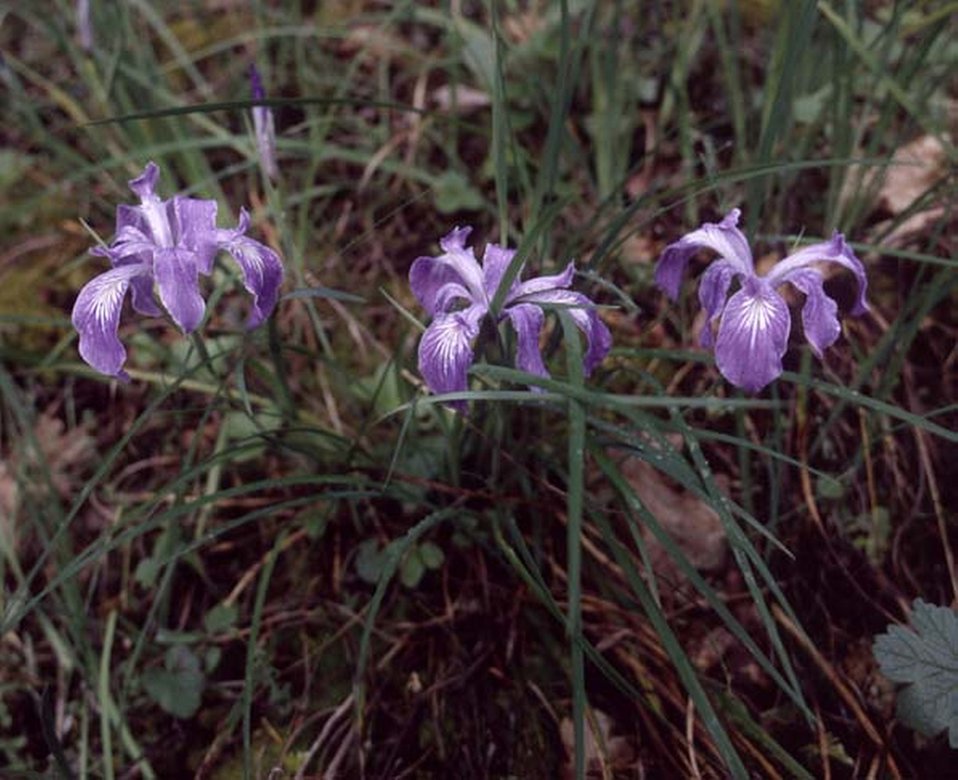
Medium shot of Iris wildflower habitat.